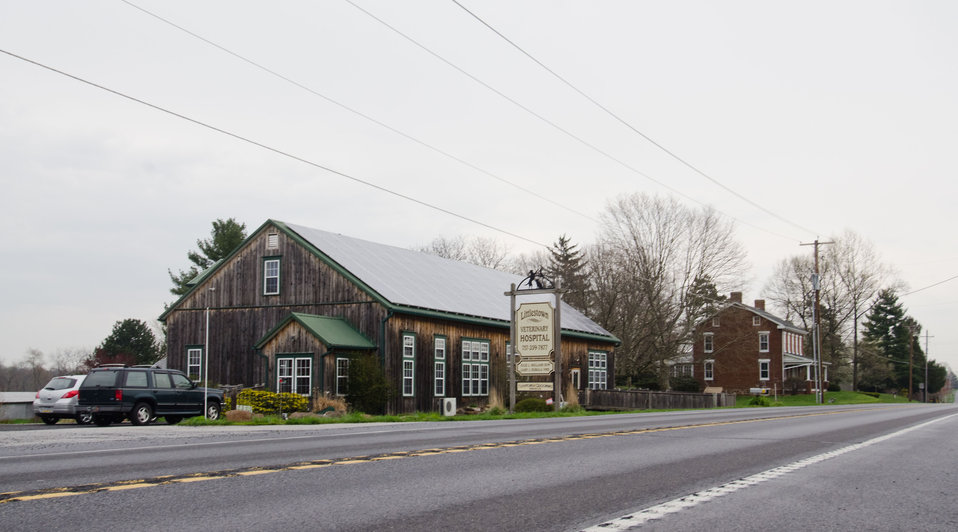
105 solar panels are installed at Littlestown Veterinary Hospital in Littlestown, PA, in mid September 2010. The Littlestown Veterinary Hospital in Littlestown, PA, received a grant from the U. S. Department of Agriculture, Rural Development under the Rural Energy for America Program (REAP) to have solar panels installed to help reduce their carbon footprint and to have cost effective electric power for the hospital. REAP provides grants for energy audits and renewable energy development assistance. The program also provides funds to agricultural producers and rural small business to purchase and install renewable energy systems and make energy efficiency improvements. The expected cost savings using solar power for the hospital’s electrical needs is expected to reduce the facility’s operating expenses by 30%-40%.